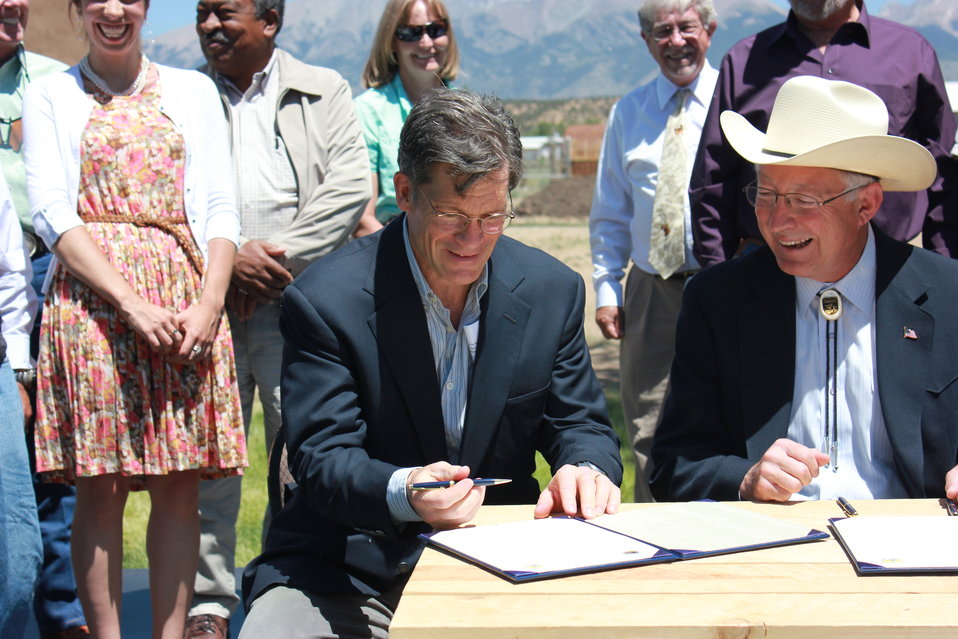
Historic Conservation Easement in Sangre de Cristo Mountains